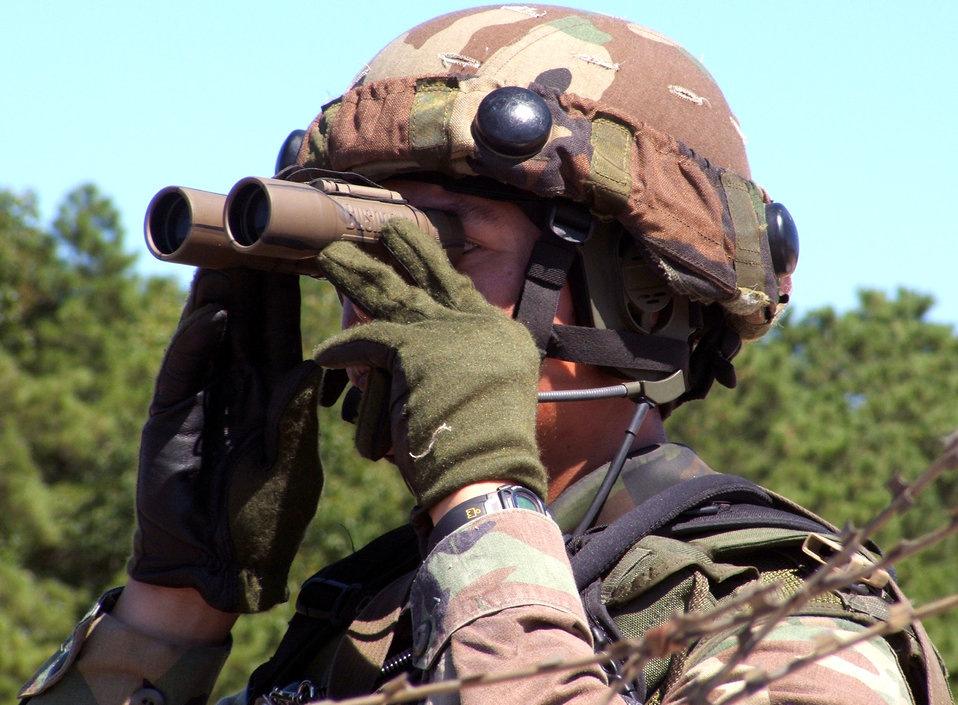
Deployment skills

Master Sgt. Michael Lawrence scans an area for